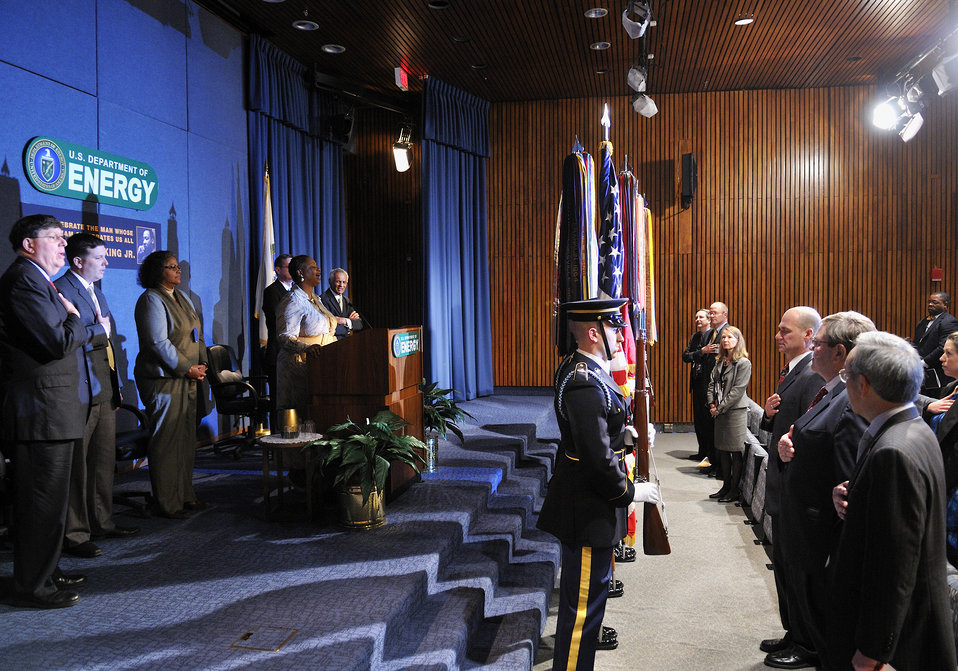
The Color Guard at the Martin Luther King Jr. Day Celebration at DOE headquarters.